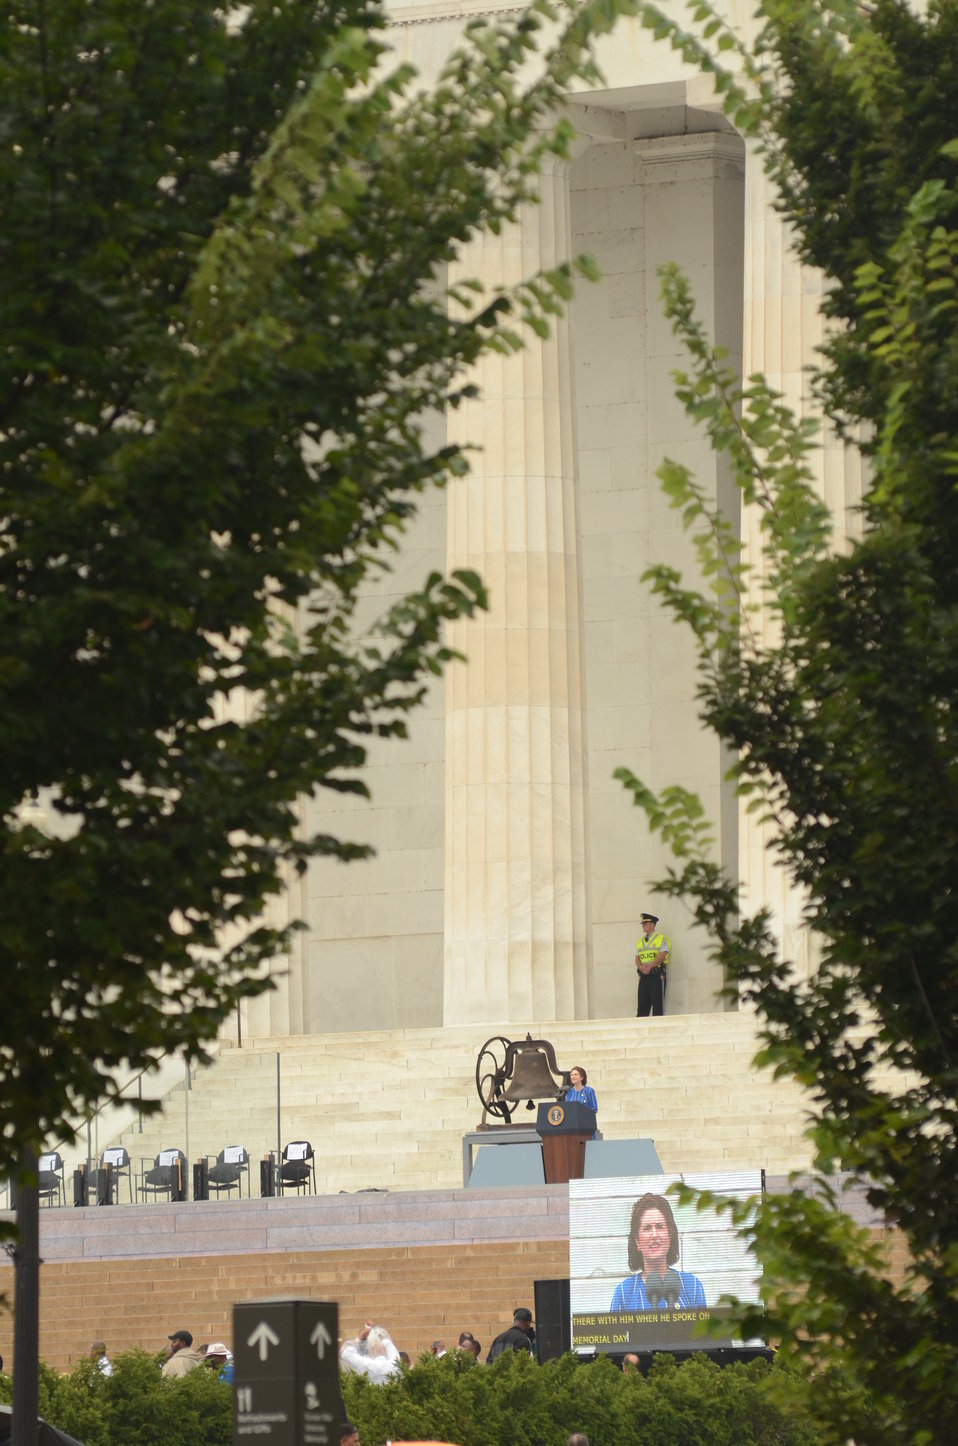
Former President Linden Baines Johnson's daughter speaking at the Lincoln Memorial for the March on Washington, D.C., on Wed., Aug. 28, 2013.